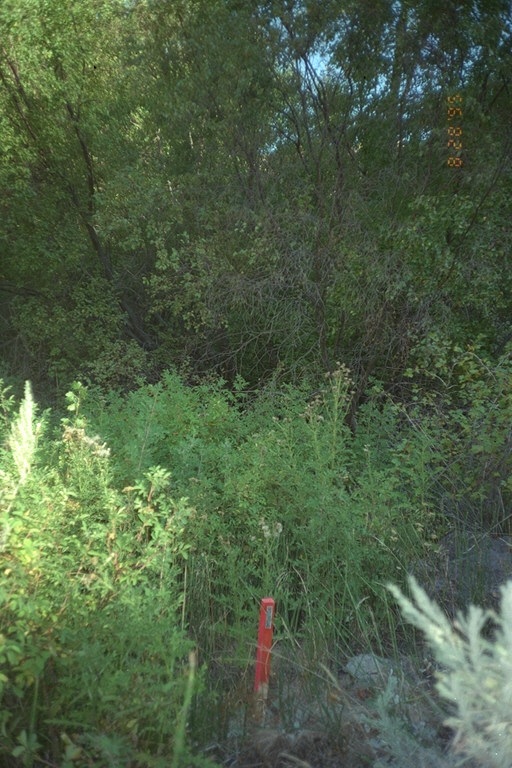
Riparian area Public Lands Salmon Field Office UCSC Upper Columbia Salmon Clearwater District